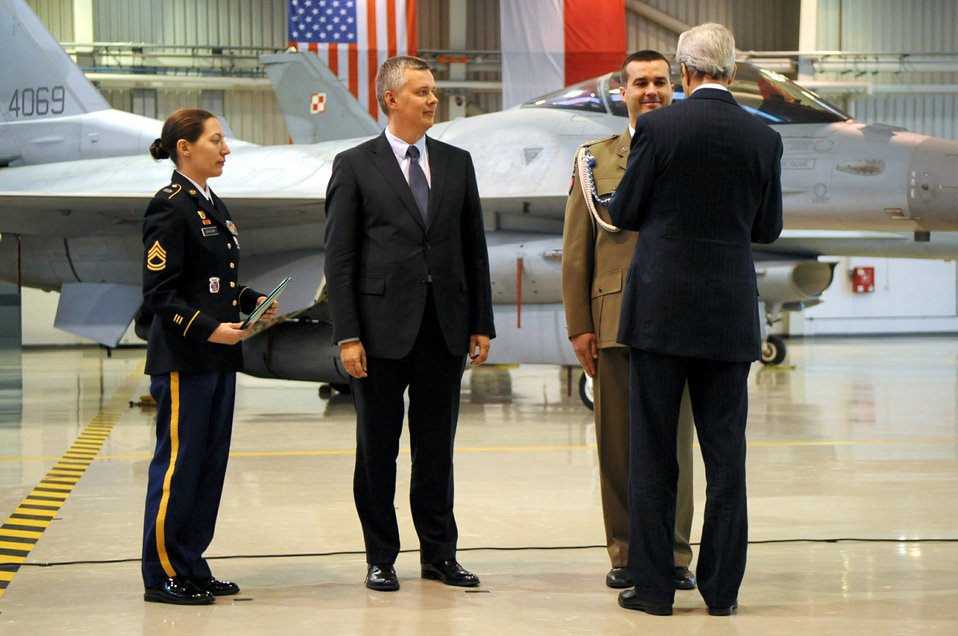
Secretary Kerry Awards a Medal to Polish Lieutenant Colonel Bagan

With Polish Defense Minister Tomasz Siemoniak looking on, U.S. Secretary of State John Kerry awards a U.S. medal to Lieutenant Colonel Wojciech Bagan as the Polish Special Forces member was recognized for valor in Afghanistan during a ceremony at the Lask Military Airbase in Poland on November 5, 2013.